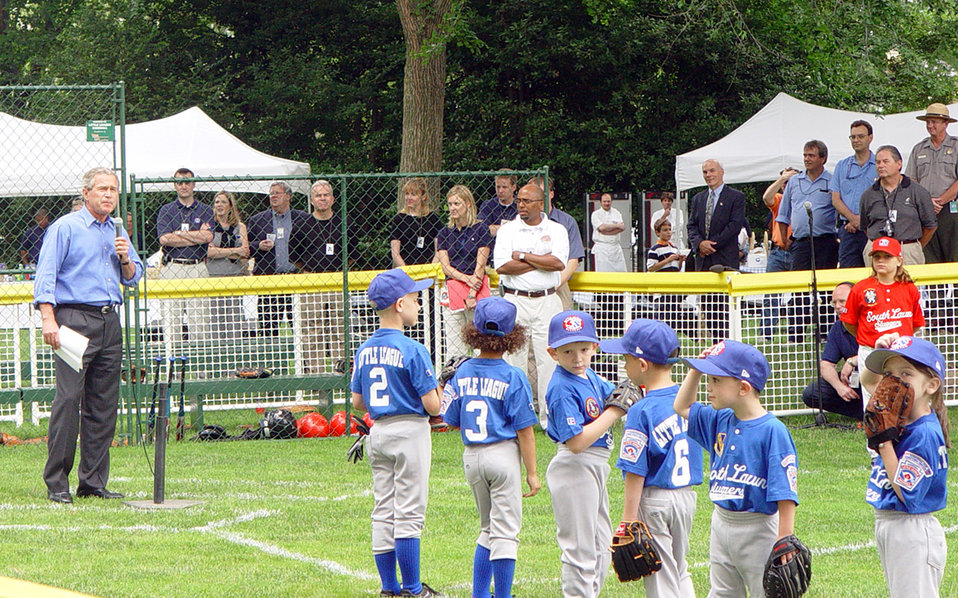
Play ball!

WASHINGTON -- President George W. Bush introduces the Bolling Air Force Base Cardinals Little League team June 13 on the South Lawn of the White House. The Cardinals played a one-inning T-ball game with the Air Station Devil Dogs from Cherry Point Marine Corps Air Station, N.C.